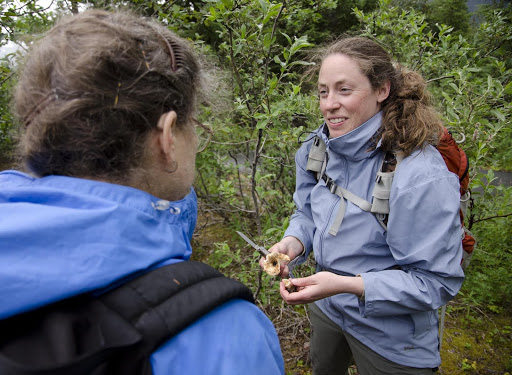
Mushroom kate2

The Chugach National Forest BioBlitz is an intense period of biological surveys that includes surveys of all organisms in Portage Valley including fungi. U.S. Forest Service Chugach National Forest ecologist Kate Mohatt leads a walk for the public to identify all mushrooms fruiting in the valley in 2011.